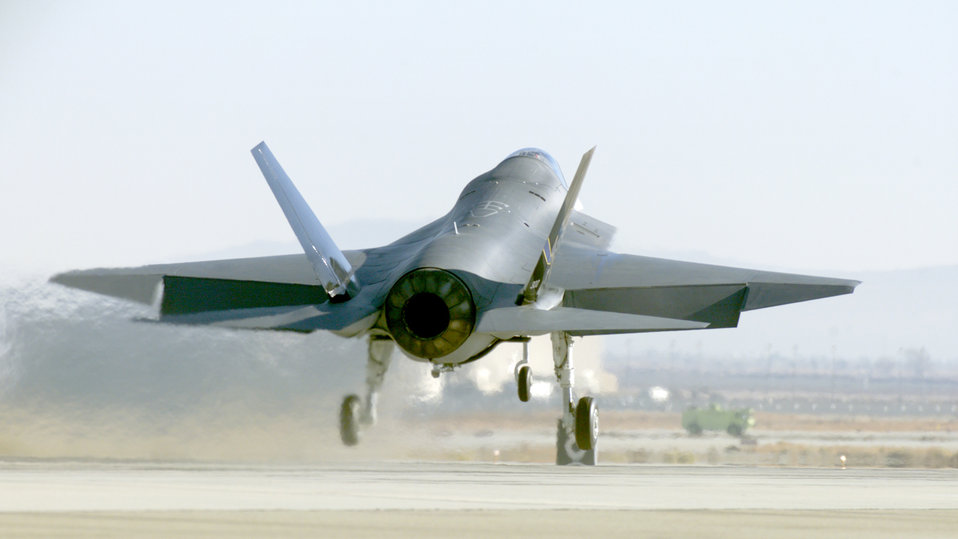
X-35C Joint Strike Fighter

The X-35C Joint Strike Fighter concept demonstrator leaves Palmdale, Calif., for nearby Edwards Air Force Base. The 27-minute sortie was the X-35C's maiden flight.